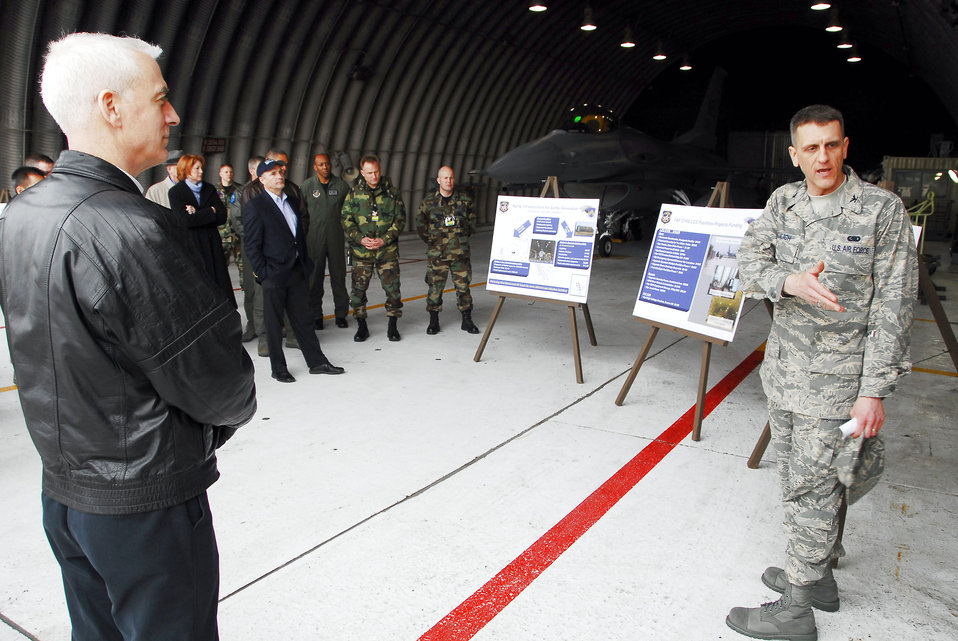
AF Board members visit Kunsan Air Base

Col. Timothy Sakulich briefs members of the Air Force Board April 2 during a tour of Kunsan Air Base, South Korea. Board members visited for a first-hand look at the base and its mission. Colonel Sakulich is the 8th Mission Support Group commander.